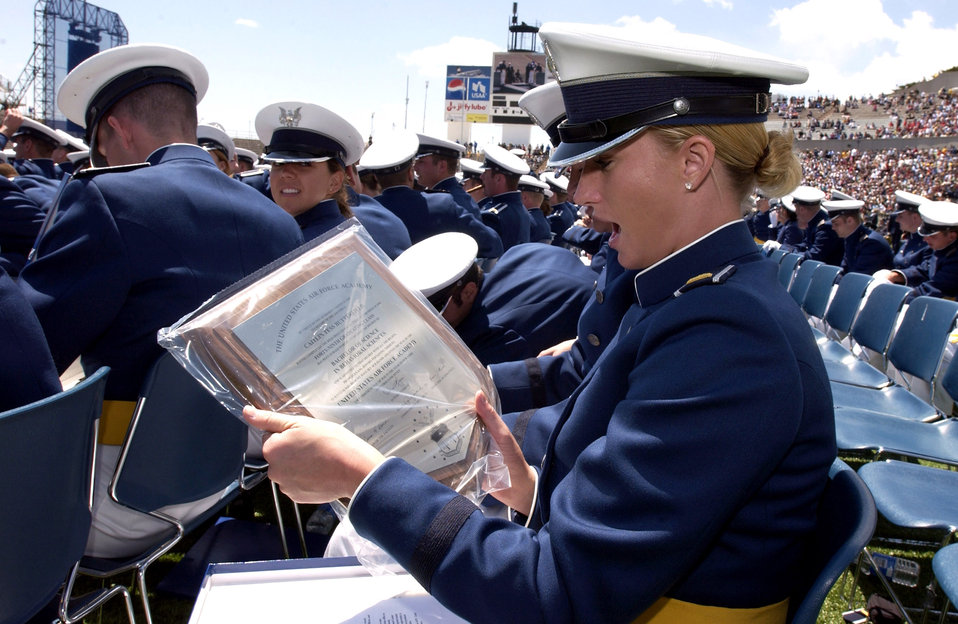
'I did it!'

Newly commissioned 2nd Lt. Catlin Tess Butterfield admires her diploma during the 2007 U.S. Air Force Academy graduation ceremony May 30 in Colorado Springs, Colo.